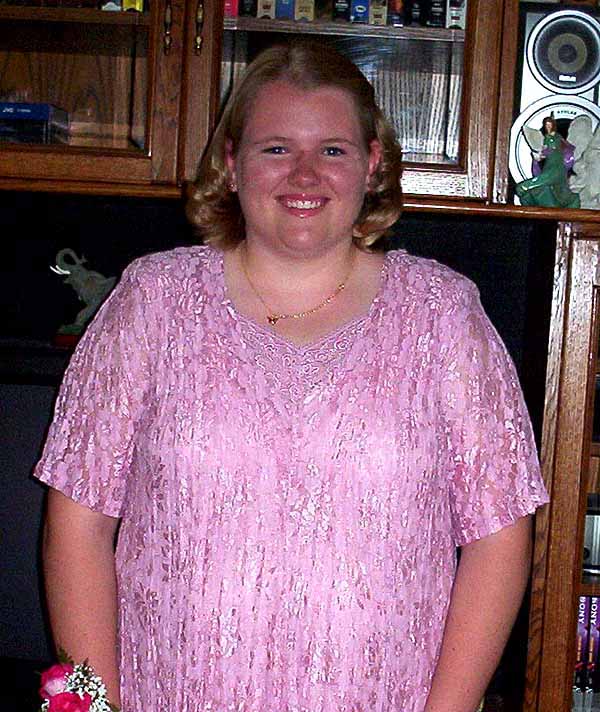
Space camp bound

WASHINGTON -- London H. Durand was a sixth-grader at Amelia Earhart Intermediate School in Okinawa, Japan, when selected to receive the 2003 Bernard Curtis Brown II Memorial Space Camp Scholarship. London, daughter of Chief Master Sgt. Gregory Durand, is slated to begin the U.S. Space Camp in Huntsville, Ala., on Aug. 16.